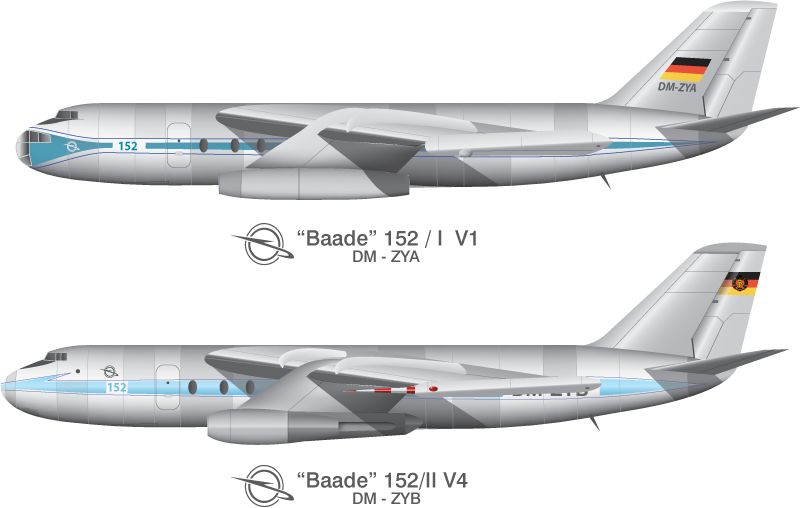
Baade 152/I V1 and Baade 152/I V4 prototypes in house livery as they flew 1958 and 1961